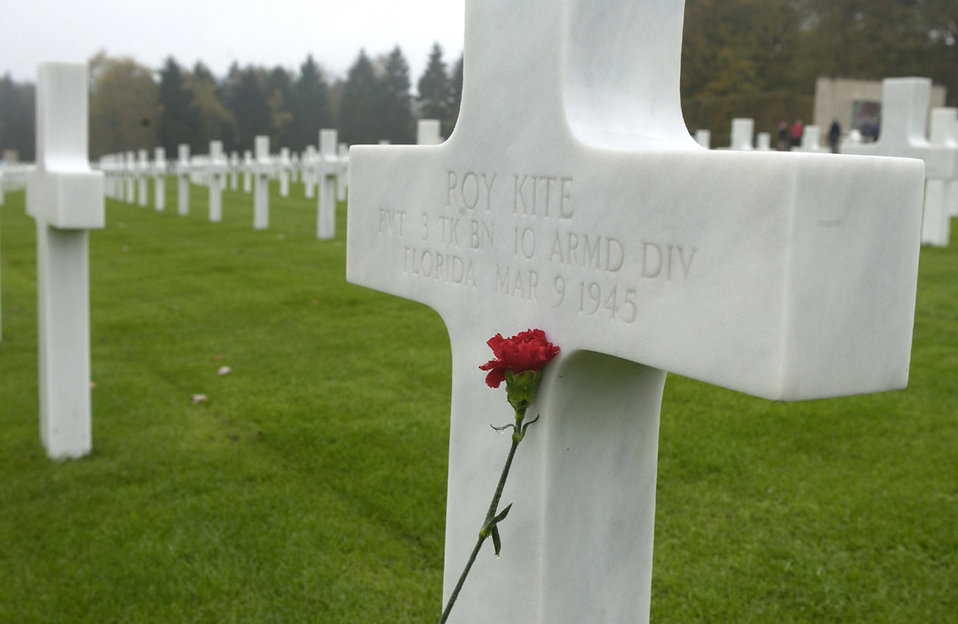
Spangdahlem Airmen honor Veterans

A red carnation placed on a cross at the Luxembourg American Cemetery and Memorial stands in remembrance of the fallen servicemen who were laid to rest there.